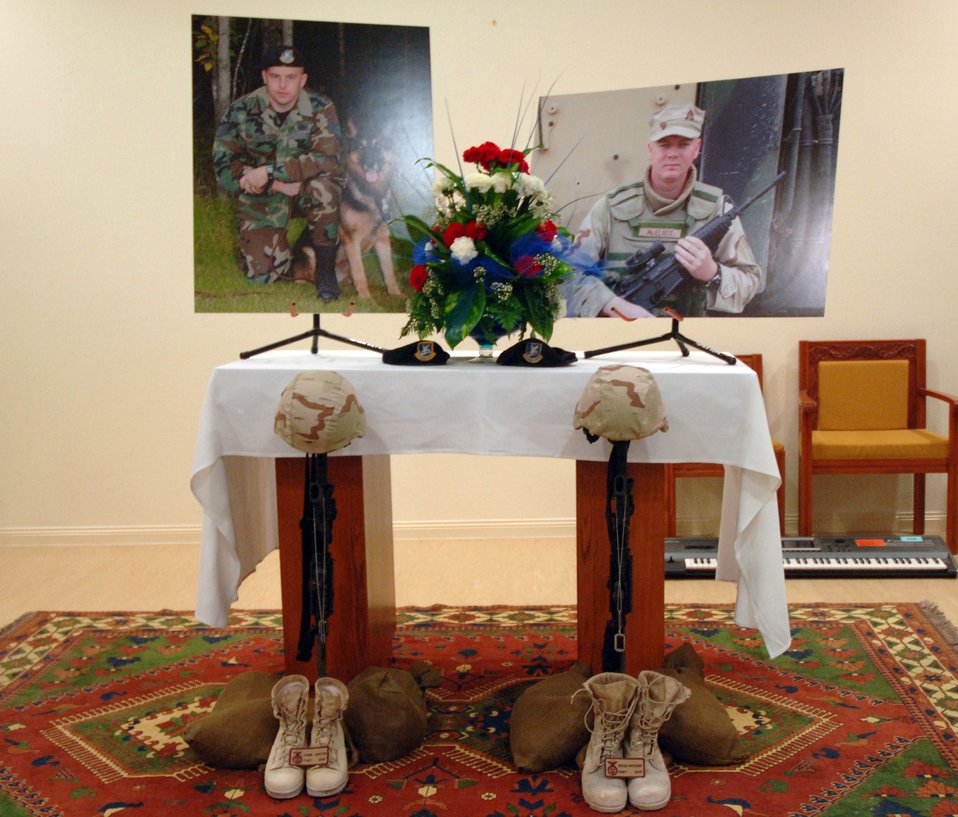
Final salute

SOUTHWEST ASIA (AFPN) -- A tribute stands as a final salute during a memorial service at a deployed location here Jan. 26 to honor two fallen security forces Airmen from Elmendorf Air Force Base, Alaska. Tech. Sgt. Jason L. Norton and Staff Sgt. Brian McElroy were assigned to the 379th Expeditionary Security Forces Squadron.